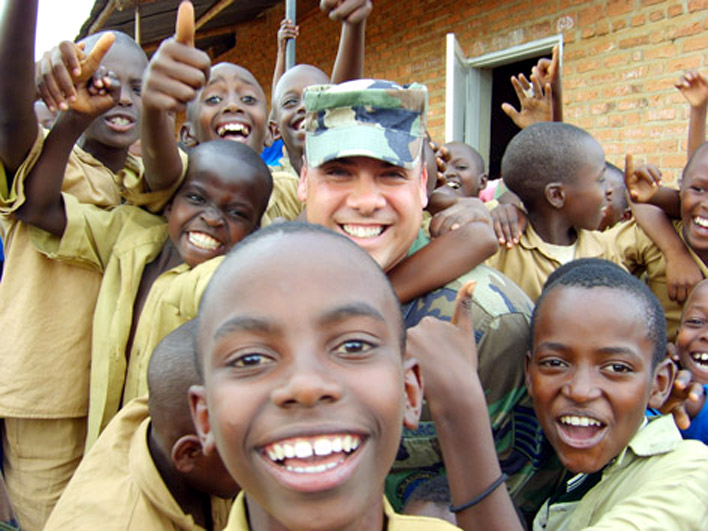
Ramstein Airmen connect with Rwandan children

School children surround Tech. Sgt. Hector Nieves at their Kigali, Rwanda school where Airmen from Ramstein Air Base, Germany, delivered school supplies, blankets and clothing donated by the Kaiserslautern Military Community. Sergeant Nieves is assigned to the 86th Air Mobility Squadron.